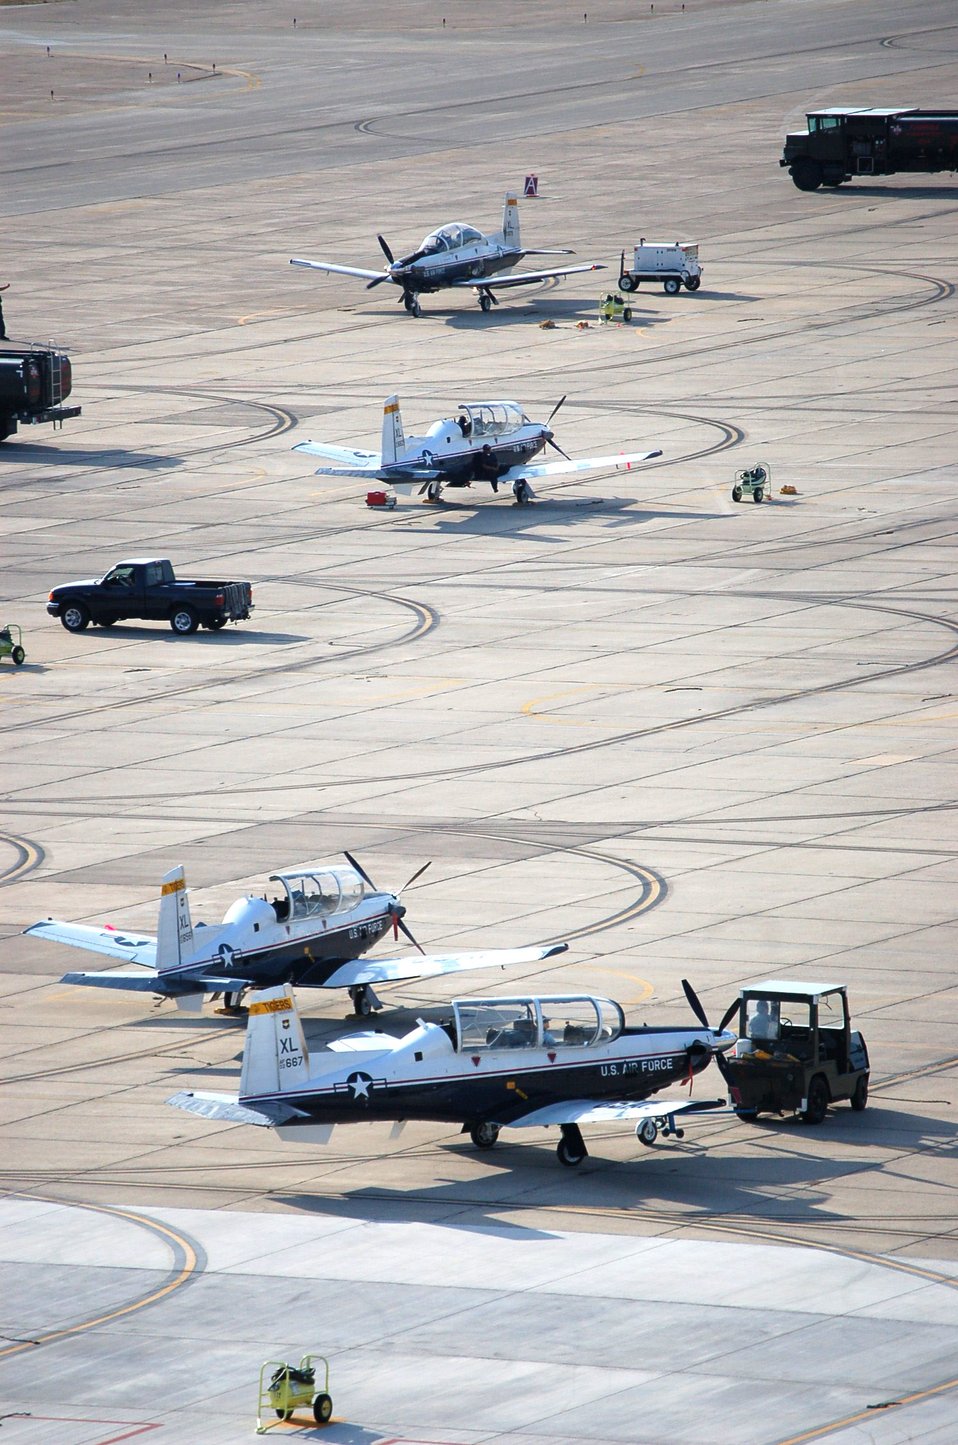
Laughlin students keep air traffic controllers busy

Maintenance workers tow a T-2 Texan II on the flightline in front of the of the air traffic control tower at Laughlin Air Force Base, Texas, on June 26, 2006. Laughlin's 47th Flying Training Wing trains Air Force pilots, who fly about 59,000 sorties a year.